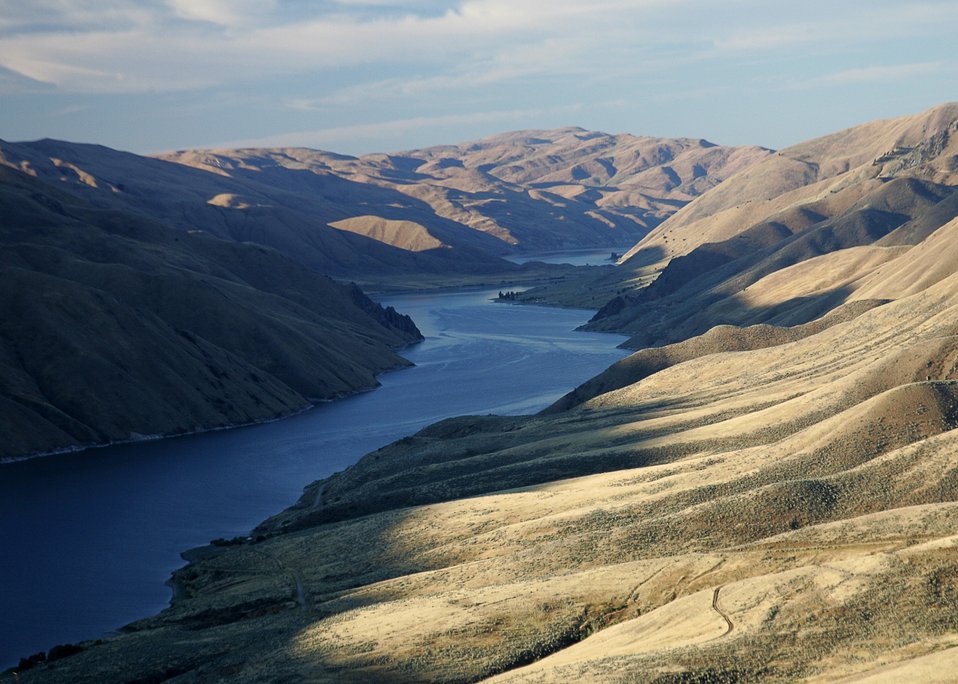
Sunrise on the Snake River Backcountry Byway.